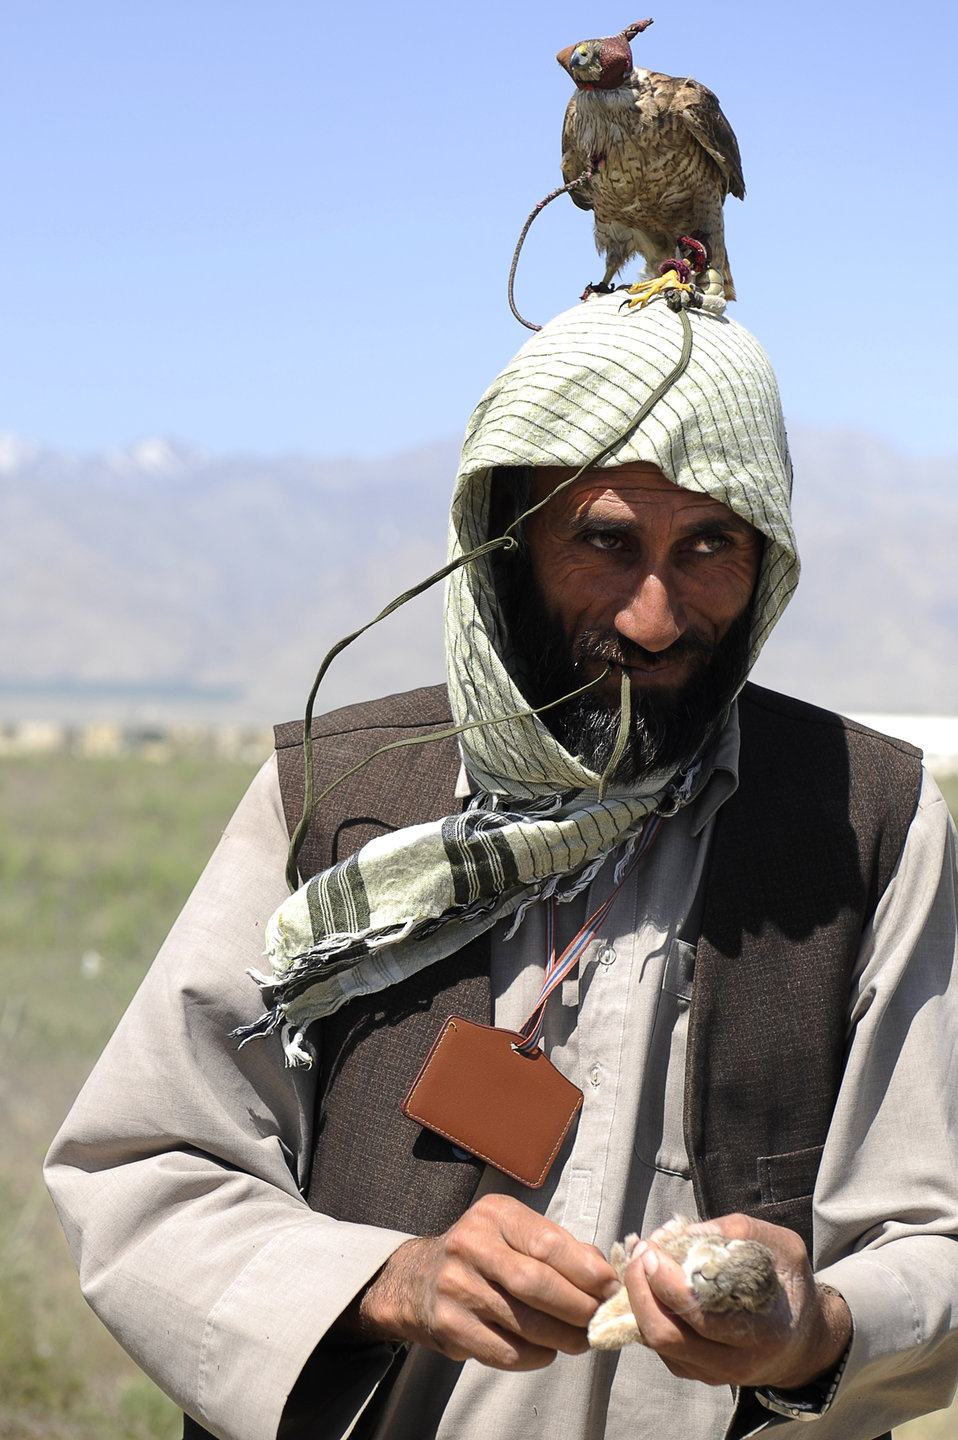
Afghan falconers and Airmen keep airfield safe

Mohammed, a local contractor, and his falcon, Basha, hold a rabbit they captured near the flightline, May 24, 2010, at Bagram Field, Afghanistan. Afghan contractors work with the 455th Air Expeditionary Wing Safety Office to keep wildlife from interfering with flying operations.